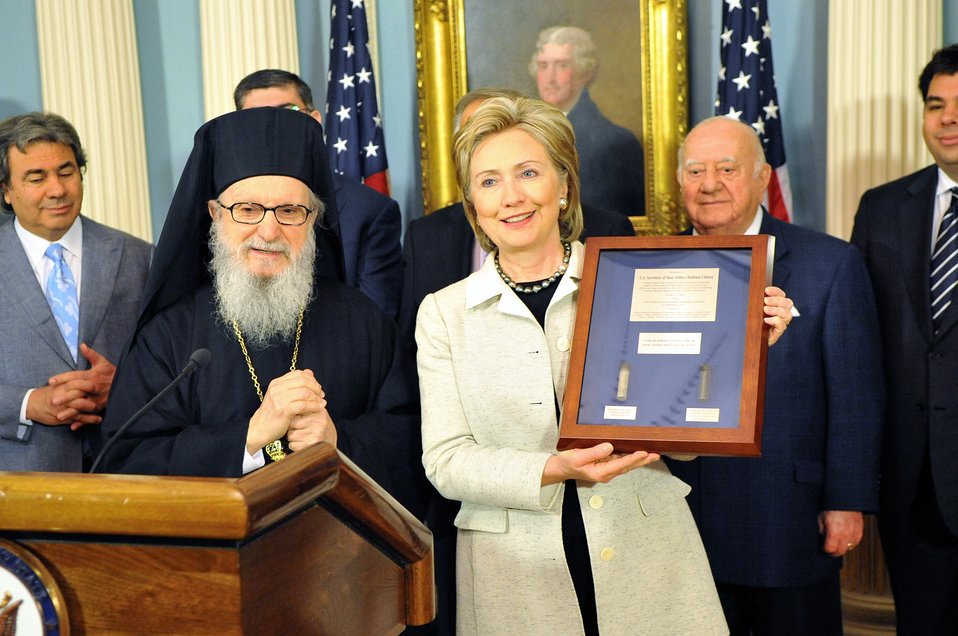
Secretary Clinton Receives National Coordinated Effort of Hellenes Award

U.S. Secretary of State Hillary Rodham Clinton holds a plaque presented to her by the National Coordinated Effort of Hellenes in the Treaty Room of the U.S. Department of State in Washington, DC May 22, 2009.